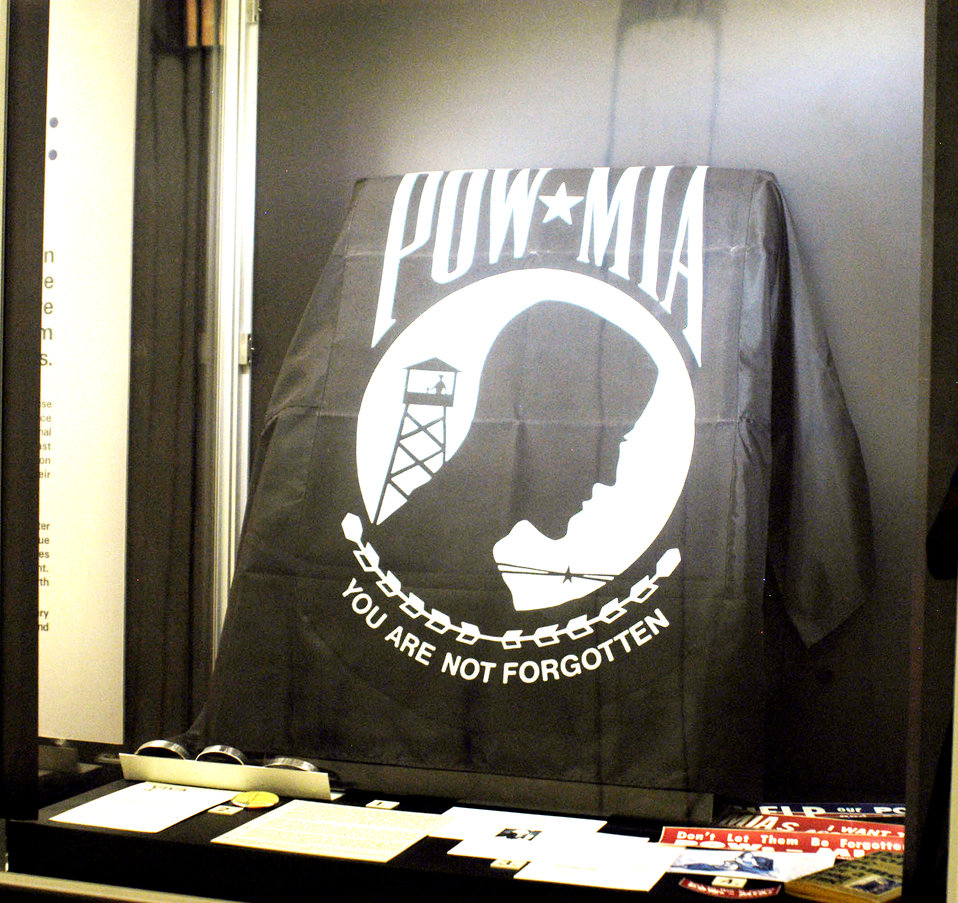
Families always have been essential to the Air Force

Articles in this display include a pre-addressed postcard to Ton Duc Thang, the president of North Vietnam, to enlist his support in determining the fate of Lt. Larry Potts at the National Museum of the U.S. Air Force in Dayton, Ohio. Despite repeated appeals like this one, North Vietnam remained unsympathetic. The black flag is the official POW/MIA flag, which is flown six times a year at designated federal sites. It was designed in 1971 by Newt Heisley, a World War II pilot and advertising artist who never profited from the uncopyrighted design.